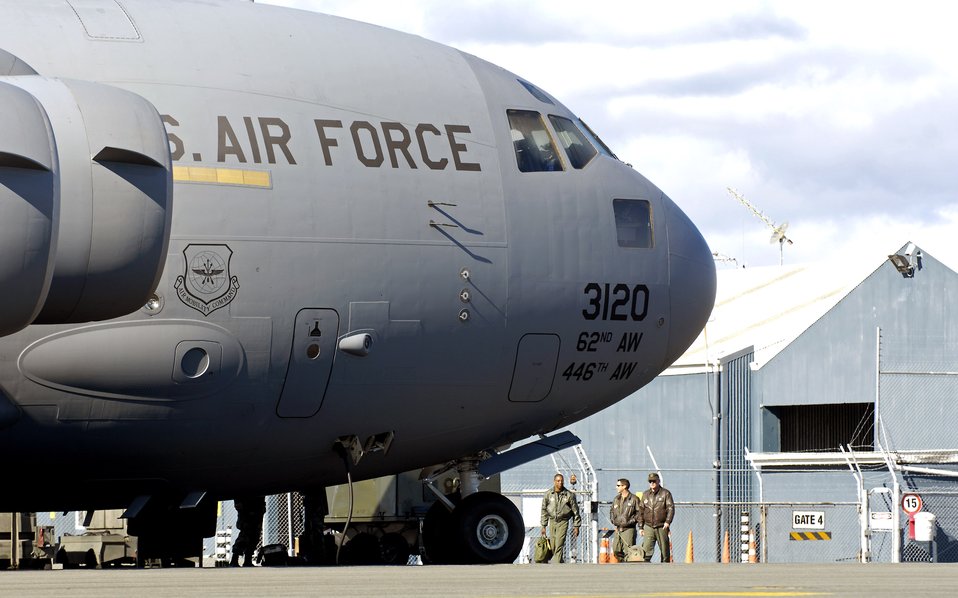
Getting ready to fly to McMurdo

Loadmasters walk to their C-17 Globemaster III to begin preparations for the upcoming winter fly-in missions to Antarctica at Christchurch, New Zealand, Aug. 19. This C-17 and 31 Airmen from McChord Air Force Base, Wash., will begin the annual winter fly-in augmentation of scientists, support personnel, food and equipment for the U.S. Antarctic Program at McMurdo Station Aug. 20. WinFly is the opening of the first flights to McMurdo station, which closed for the austral winter in February.